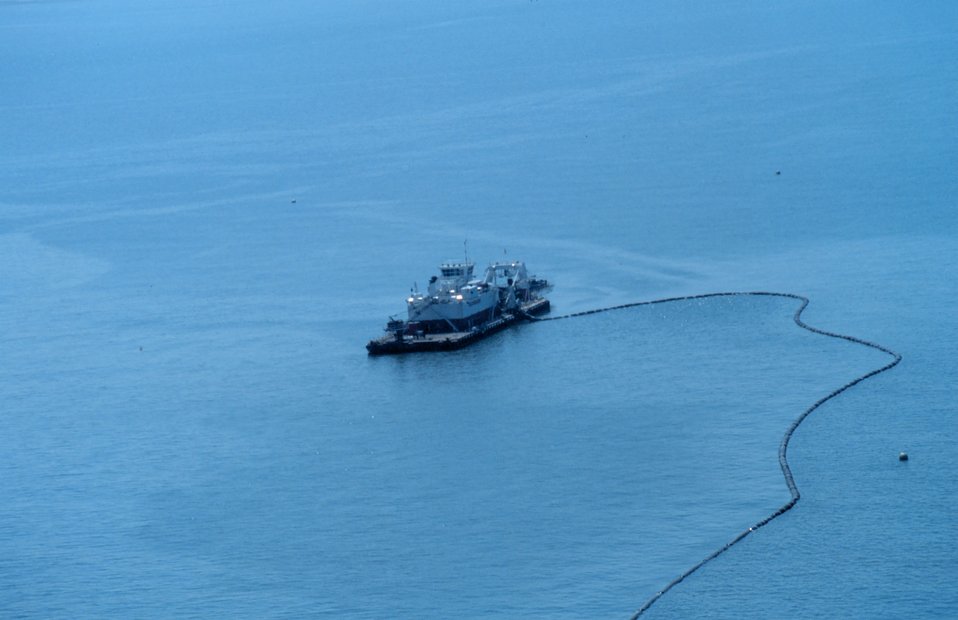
An aerial view of the 'Beach Builder'.